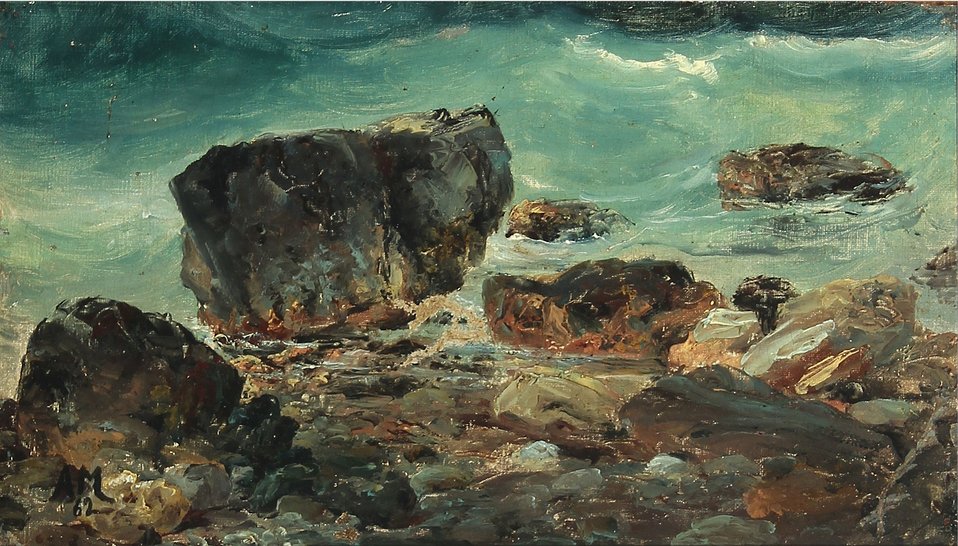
Anton Melbye - Kystnære scene med større sten